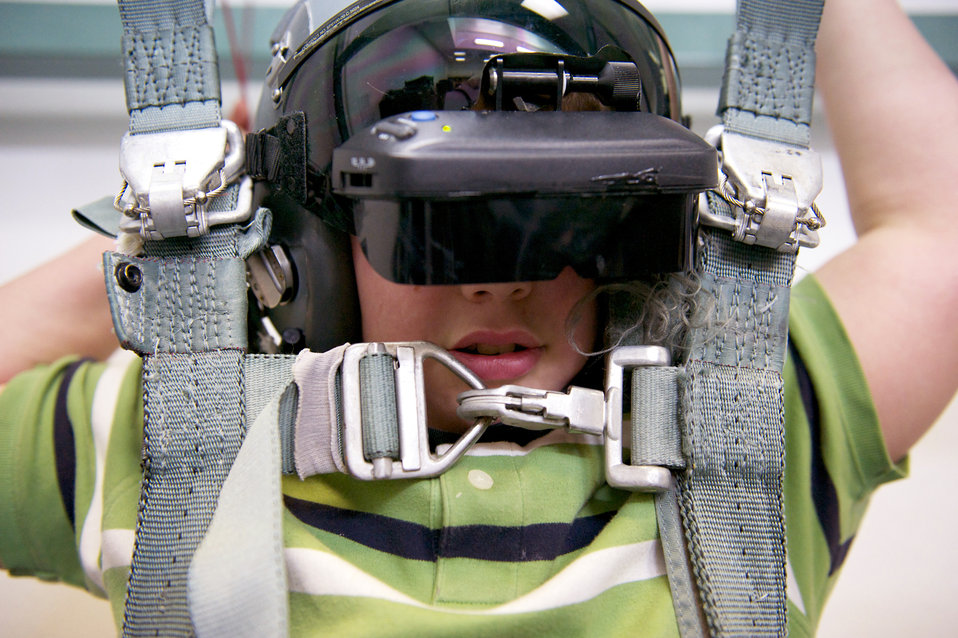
PB

Keegan Hall, 12, descends in a parachute trainer Oct. 29, 2010, at Joint Base Elmendorf-Richardson. Keegan enjoyed a tour of several 3rd Operations Group units with Big Brother Big Sisters members.